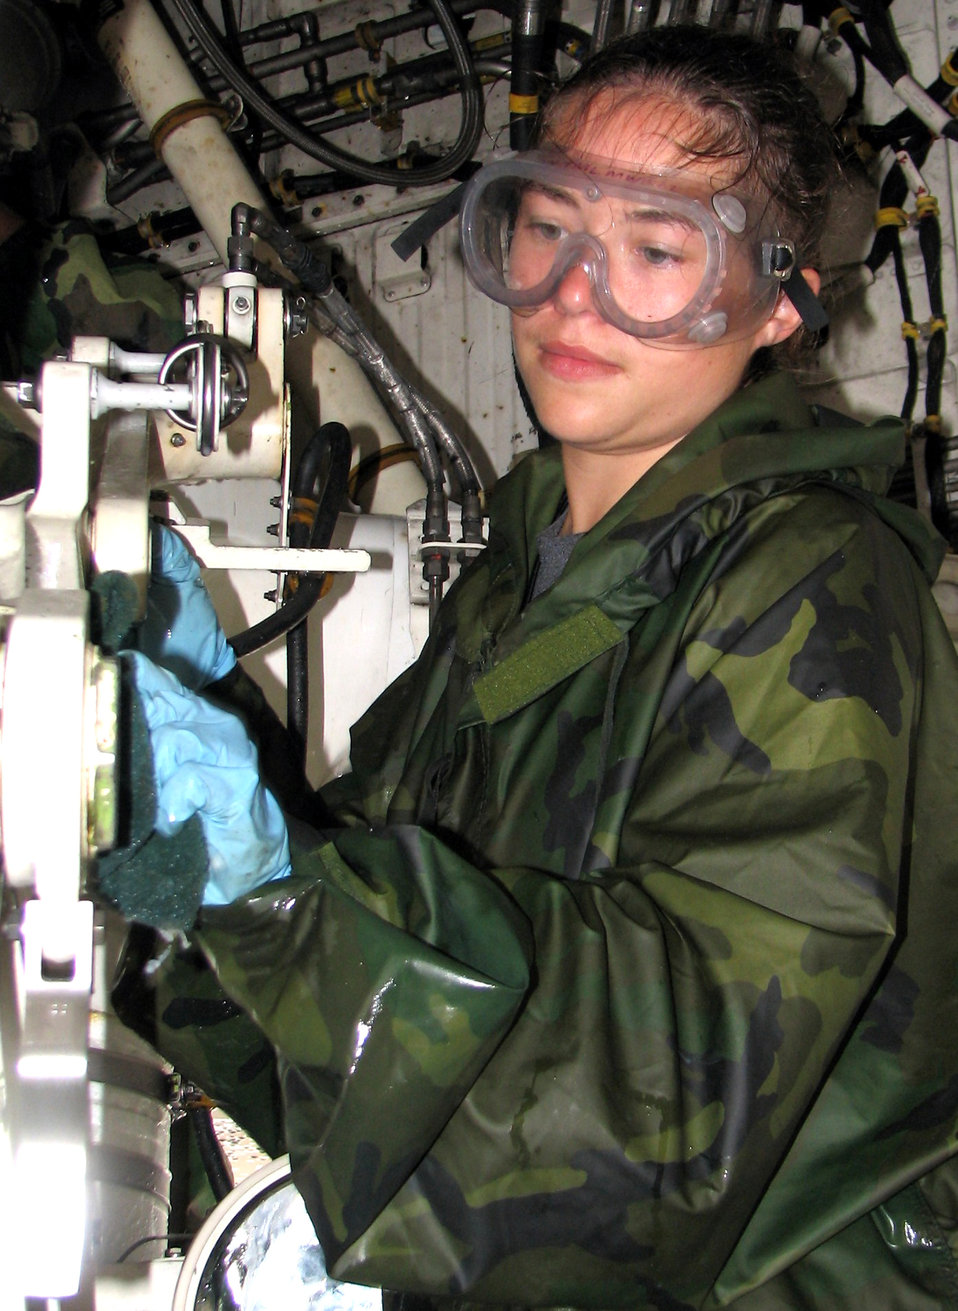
Somebody's gotta do it

Senior Airman Jessica Wrestler scrubs the inside of a B-2 Spirit landing gear well at Andersen Air Force Base, Guam, on Aug. 11. Airmen from the 36th Expeditionary Aircraft Maintenance Squadron and 13th Expeditionary Bomb Squadron took part in the wash. A full wash of the aircraft is required every 30 days. It takes approximately 24 hours to wash a B-2, and a special concentration of soap is used, different from any other aircraft. Airman Wrestler is with the 36th EAMXS.